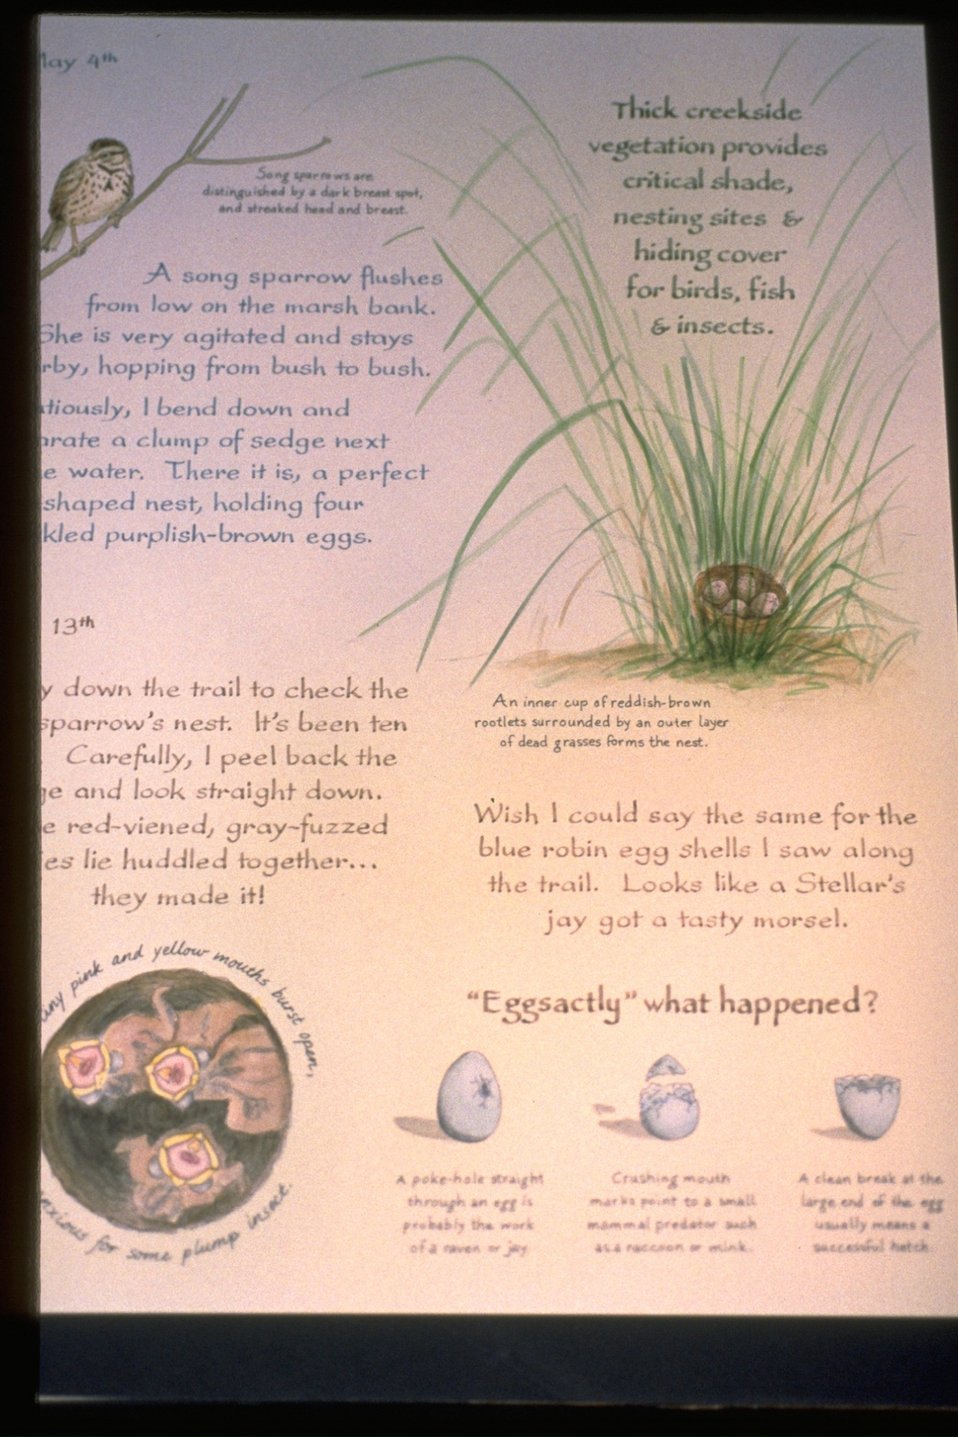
Interpretive Panels: Boardwalk Trail Journals.